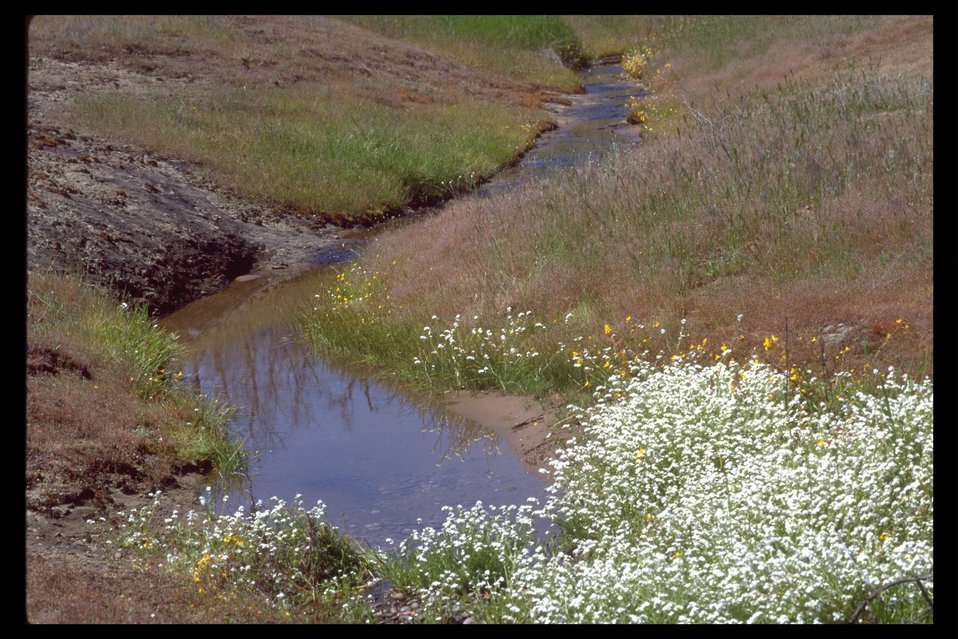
Fragrant Popcorn Flower (Plagiobothrys figuratus).